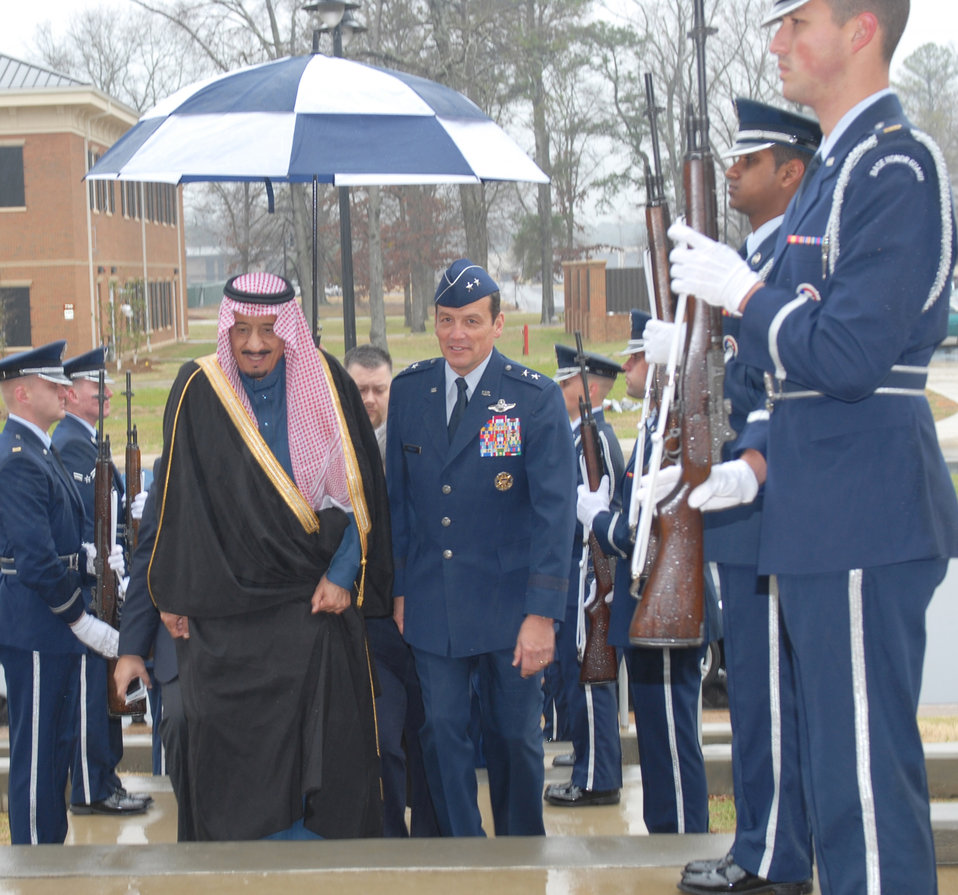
Royal Saudi family attends pilot training graduation

Major Gen. Frank J. Padilla escorts Kingdom of Saudi Arabia Prince Salman bin Abd al-Aziz Abd al-Rahman into Kaye Auditorium to attend the graduation ceremony for Specialized Undergraduate Pilot Training Class 09-06 March 13 at Columbus Air Force Base, Miss. Prince Salman's son, Khalid bin Salman bin Abd al-aziz al-Saud, culminated a year of training at Columbus AFB and joined the 25 other members of the class to receive their wings during the formal graduation ceremony. General Padilla is the Mobilization Assistant to 9th Air Force and U.S. Forces Central.